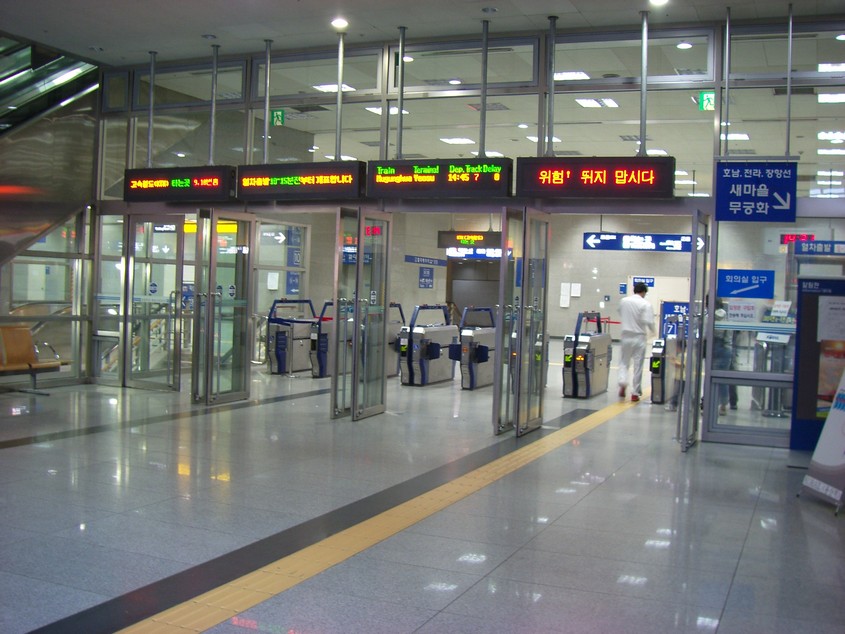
Yongsan Station